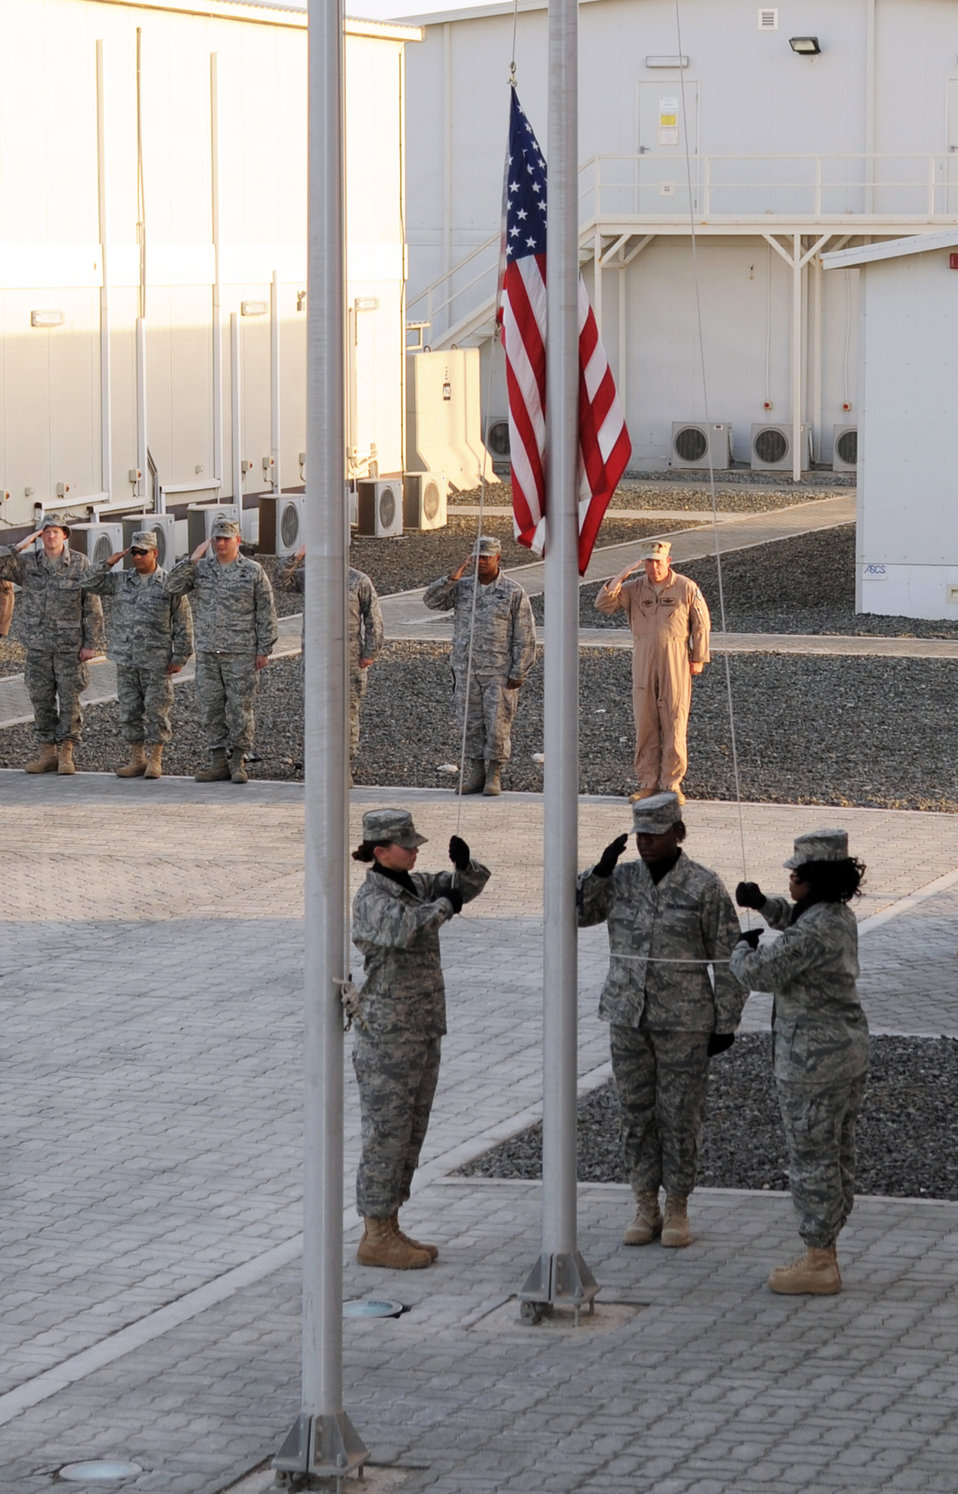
Women's History Month

Airman Lyndee Bennett (from left), 380th Expeditionary Security Forces Squadron; Tech. Sgt. Camille Horton, 380th Expeditionary Medical Group; and Airman 1st Class Teleasha Riley, 380th Expeditionary Communications Squadron, retire the flag March 19, 2010, during an all-female 380th Air Expeditionary Wing Women's History Month retreat ceremony at an air base in Southwest Asia. The formation honored women who serve in the military, past and present.